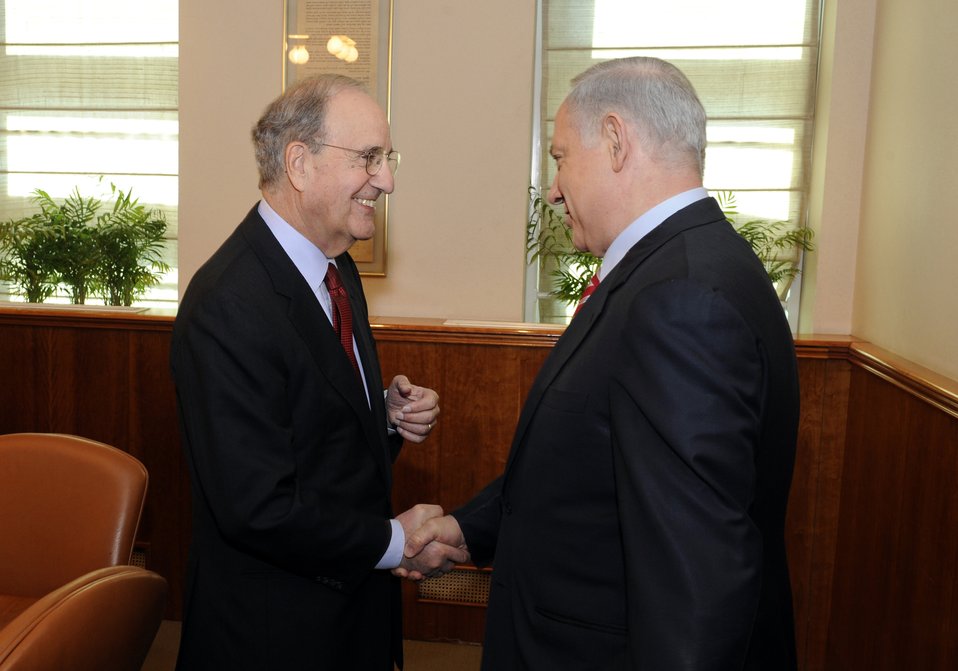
Special Envoy Mitchell With Israeli Prime Minister Benjamin Netanyahu

Special Envoy Mitchell shakes hands with Israeli Prime Minister Benjamin Netanyahu in Jerusalem, March 21, 2010.